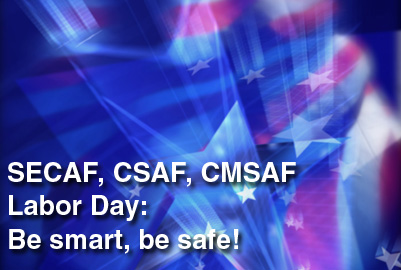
Joint Labor Day message

Secretary of the Air Force Michael Donley, Chief of Staff Gen. Norton Schwartz and Chief Master Sgt. of the Air Force James Roy urge all members of the Air Force family to maintain their focus on safety during this holiday weekend and beyond.